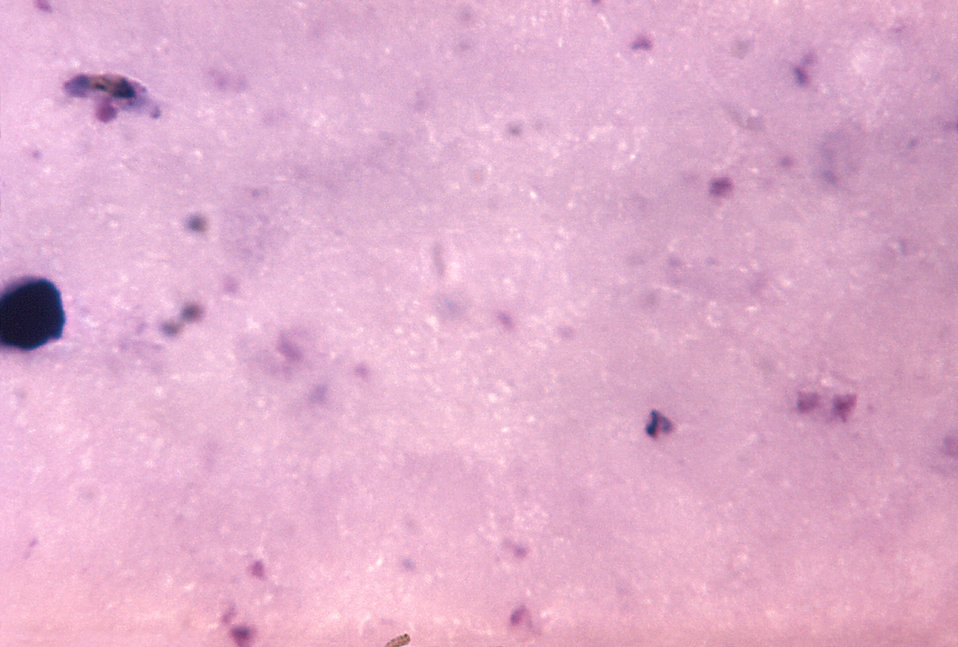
This thick film micrograph depicts a P. falciparum gametocyte, and a P. malariae growing trophozoite, Mag. 1125X.